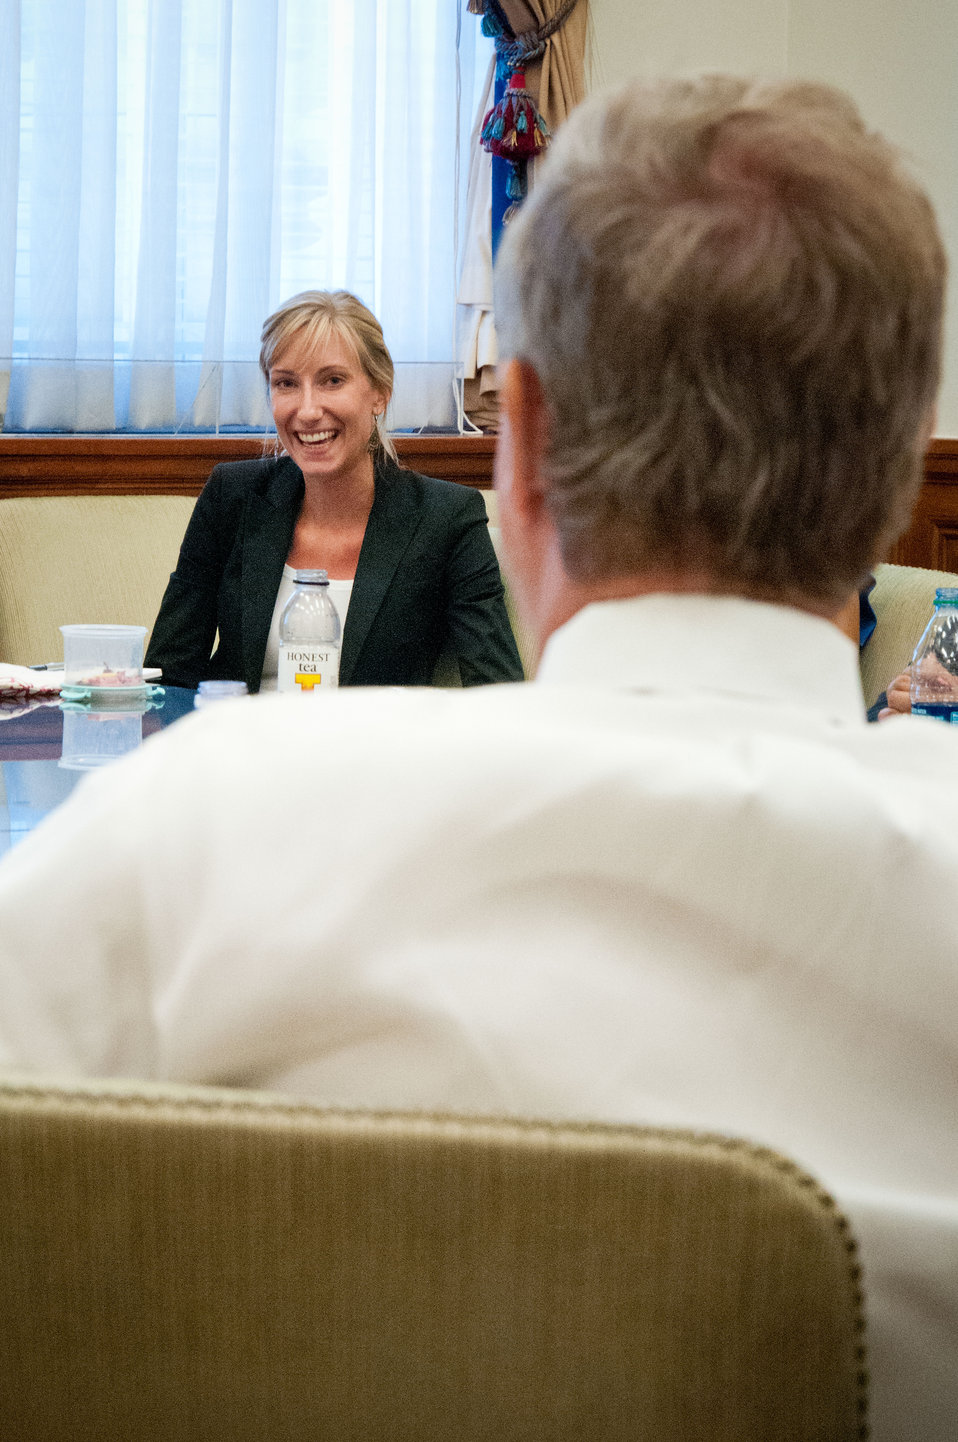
Rebecca Shively, Farm Services Agency had the opportunity with other United States Department of Agriculture employees to discuss the roles they play within the department at a Brown Bag Lunch held with Agriculture Secretary Tom Vilsack in Washington, D.C., on Wednesday, July 25, 2012. Secretary Vilsack holds the occasional Brown Bag Lunches to discuss the role United States Department of Agriculture employees play and to thank them for their dedication and diligence.